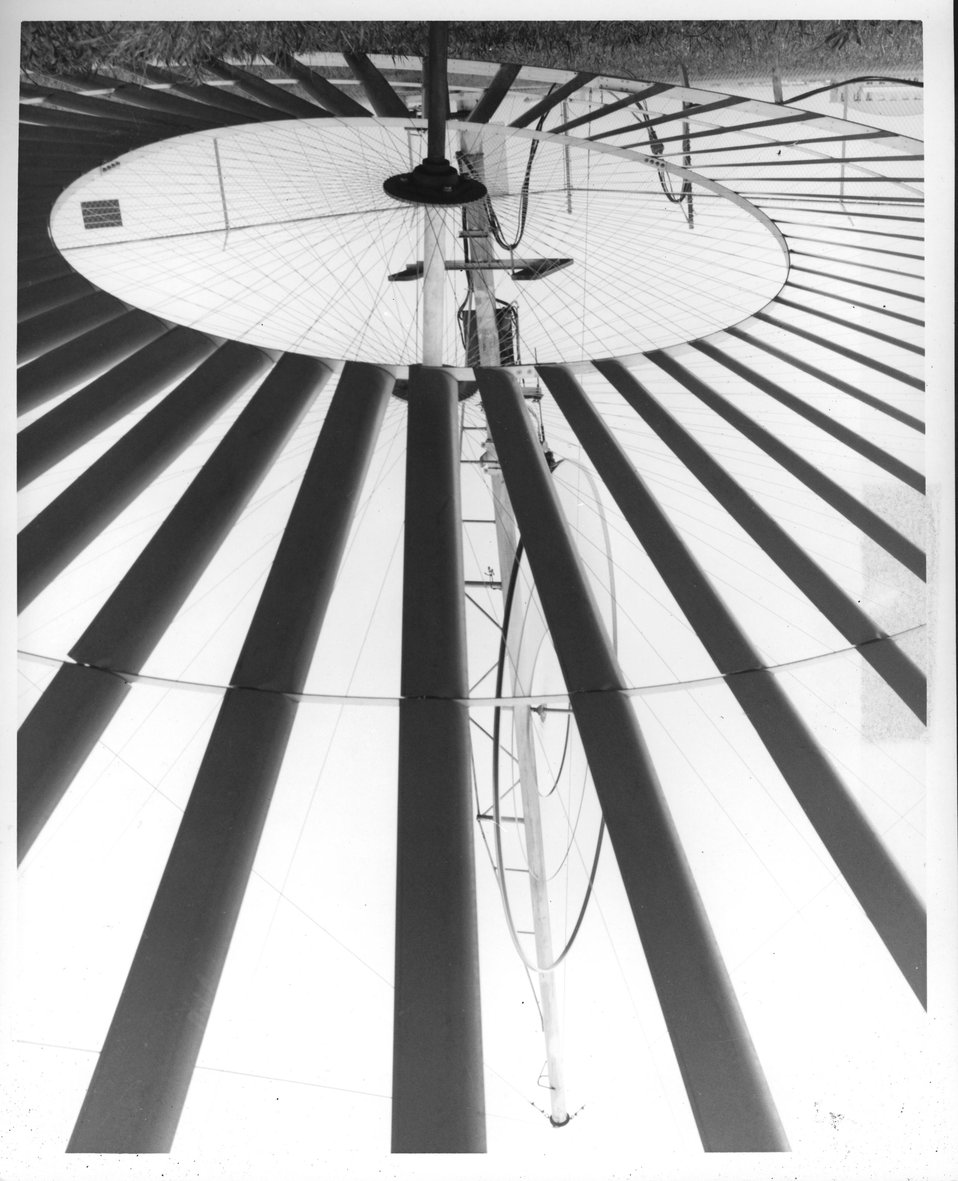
Scientists at Oklahoma State University, Stillwater, Oklahoma, are testing windmill resembling a bicycle wheel for the U.S. Department of Energy. c. 1975